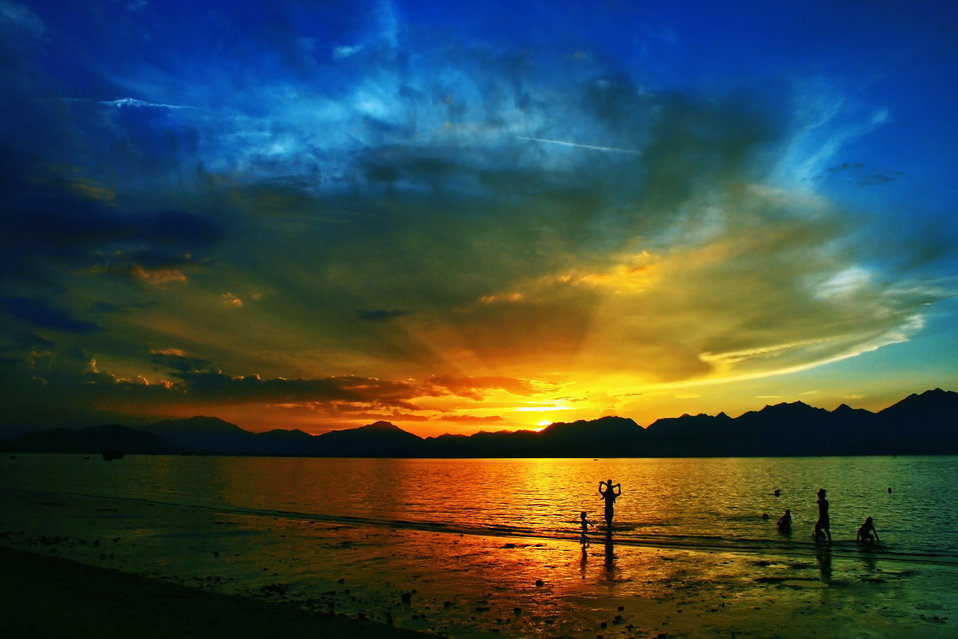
Sunset #7

Sunset on the bay of danang, central vietnam..